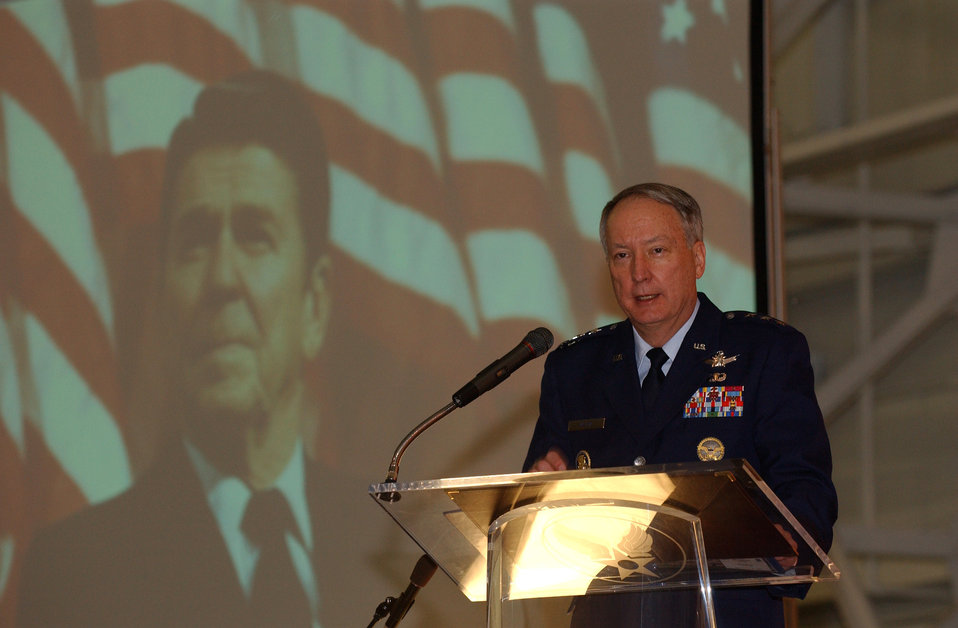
Dedication ceremony honors President Reagan

Lt. Gen. Frank G. Klotz addresses the more than 500 military and civilians attending the Ronald W. Reagan Missile Defense Site dedication ceremony at Vandenberg Air Force Base, Calif., on Monday, April 10, 2006. General Klotz is vice commander of Air Force Space Command.